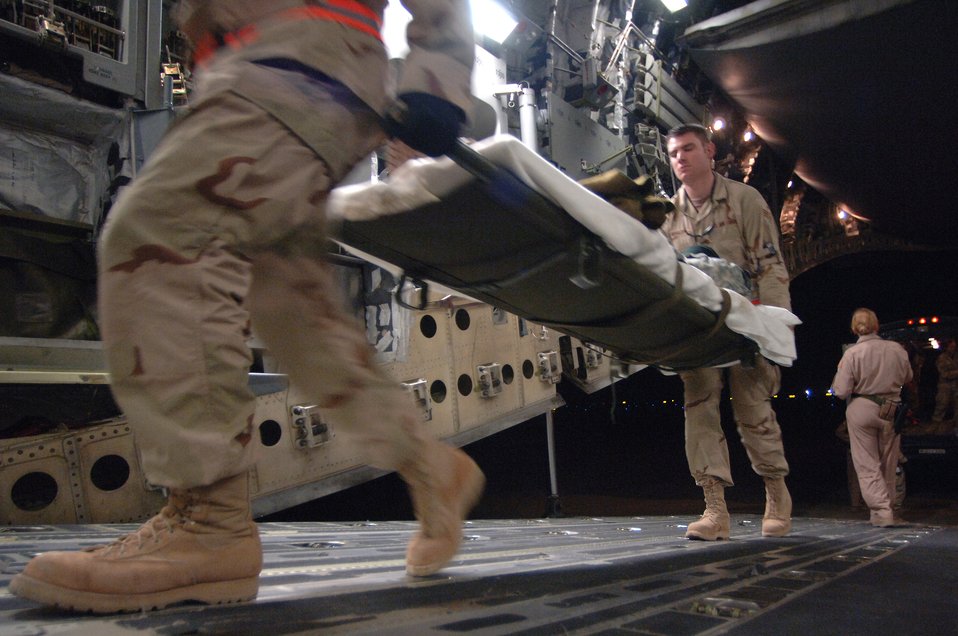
Injured warfighters take flight

Tech. Sgt. Sean Devine and Senior Airman Ricardo Reveles help load injured Soldiers onto a medical evacuation C-17 Globemaster III Feb. 21 at Balad Air Base, Iraq, departing for Landstuhl, Germany, where they will receive further care for their wounds.